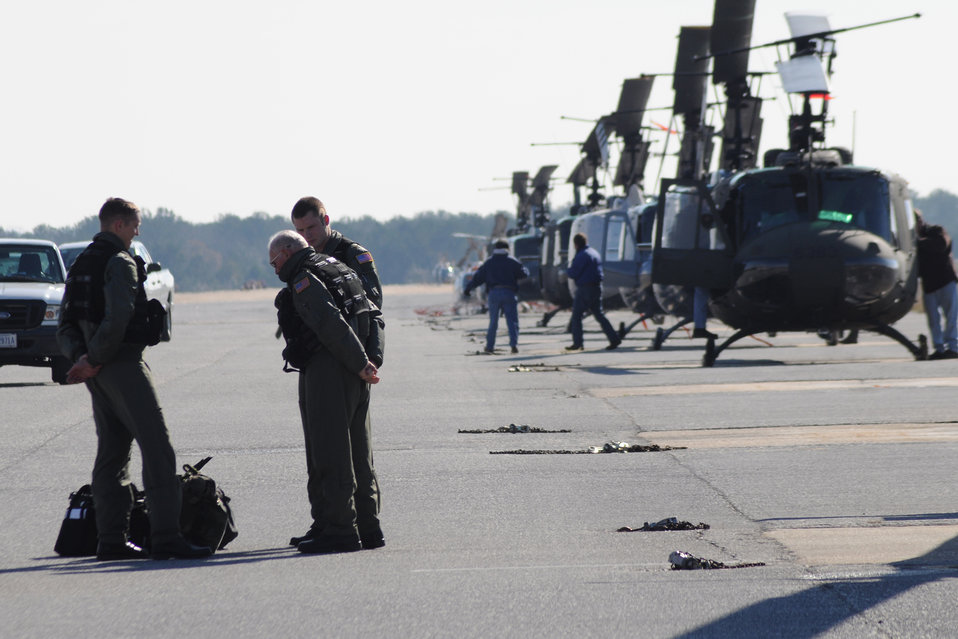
Helicopter training

Student pilots from the 23rd Flying Training Squadron at Fort Rucker, Ala., meet with their instructor before takeoff for a training mission. The 23rd FTS is the third and final phase of undergraduate pilot training before the student pilots can obtain their wings. It is the Air Force's primary source of helicopter pilot training for special operations, combat search and rescue, missile support and distinguished visitor airlift missions.